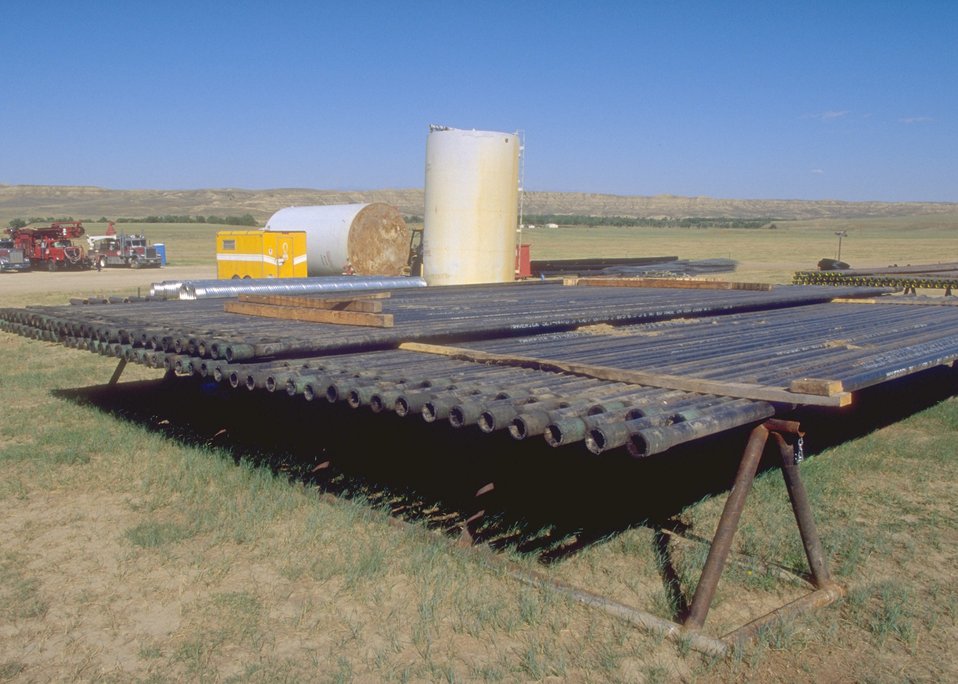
Temporary storage area for coal bed methane development, Buffalo Field Office.